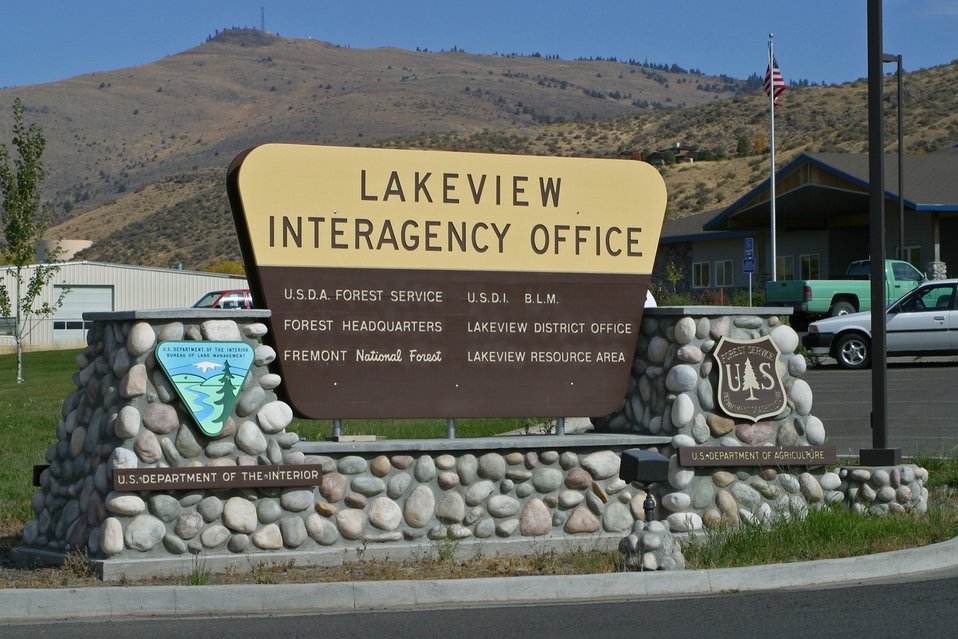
Bureau of Land Management Lakeview District Office is co-located with the Fremont National Forest in Lakeview, Oregon.